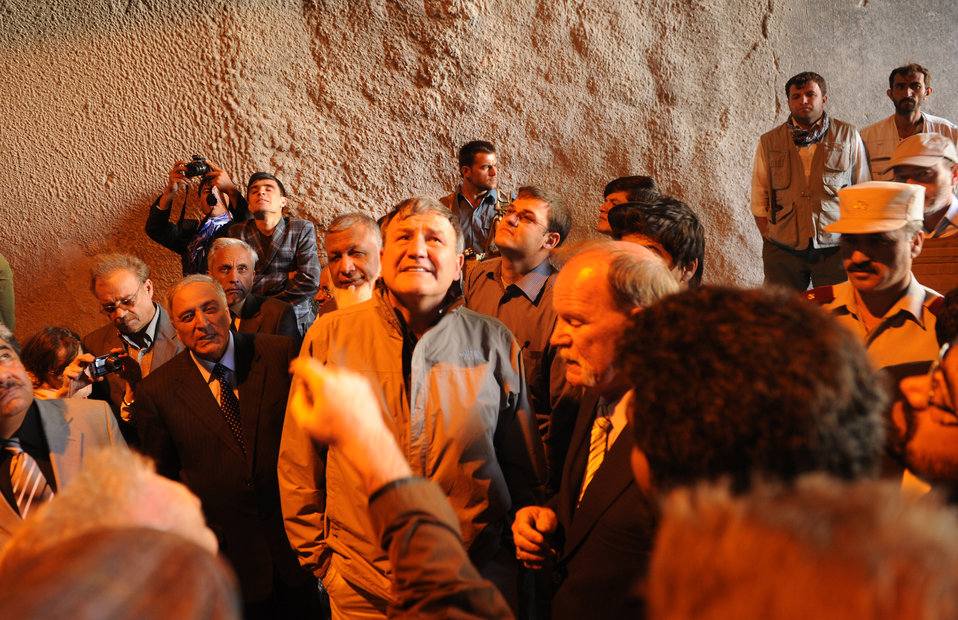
U.S. Ambassador Karl W. Eikenberry attends a ceremony to mark the beginning of renovations at the Salang Tunnel on the border of Parwan and Baghlan Provinces, Afghanistan, on Wednesday, June 15, 2011. (S.K.Vemmer/Department of State)